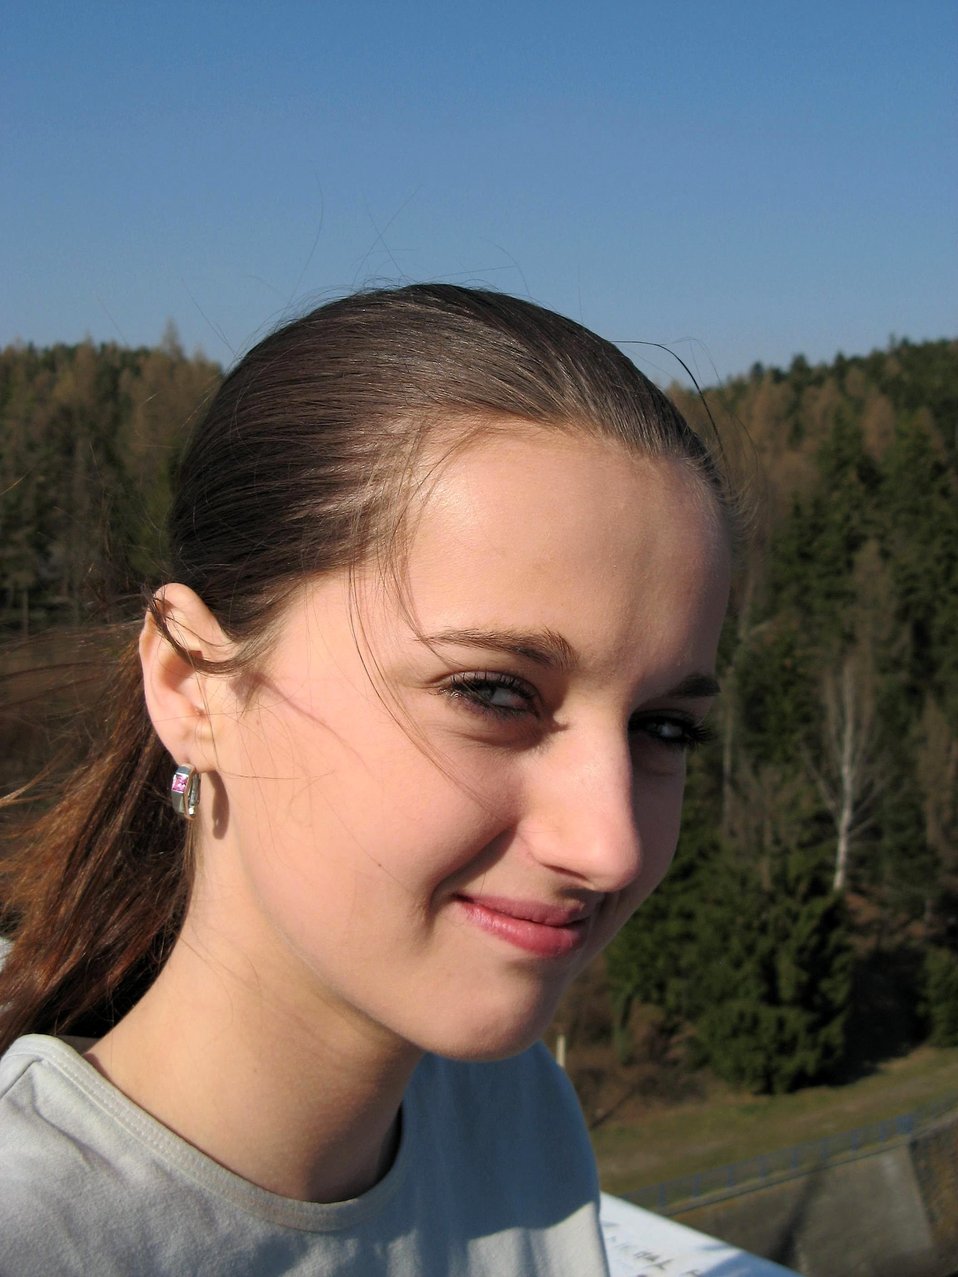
English:
Image title: Cute teen girl Image from Public domain images website, http://www.public-domain-image.com/full-image/people-public-domain-images-pictures/female-women-public-domain-images-pictures/cute-teen-girl.jpg.html